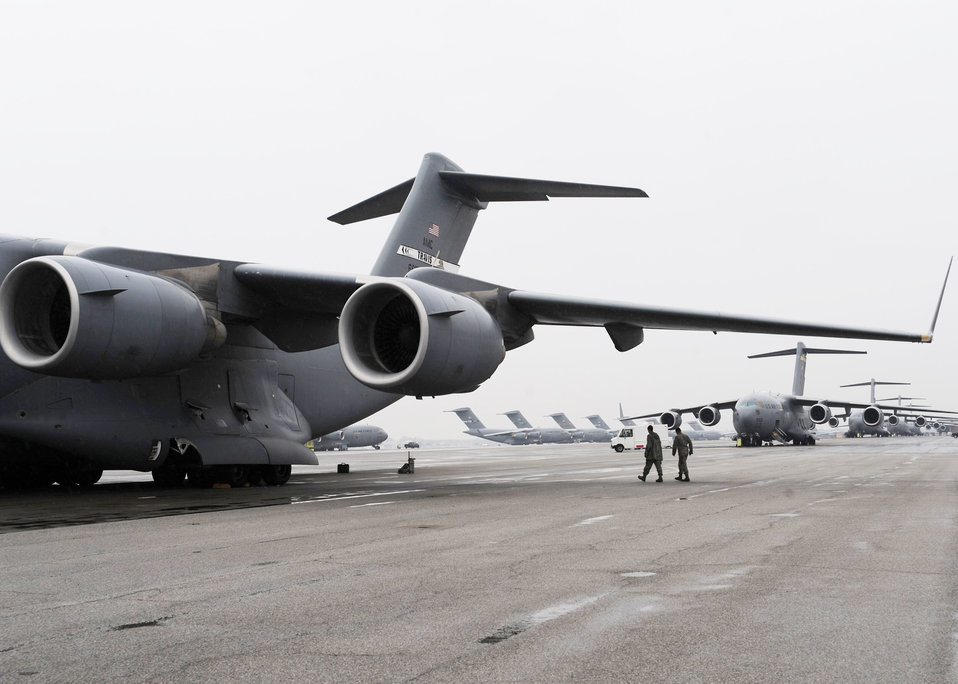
C-17's support Haiti mission

A C-17 Globemaster III from Travis Air Force Base, Calif., sits on the flightline along with planes from several other bases Jan. 21, 2010 at Charleston Air Force Base, S.C. The planes are being used to support the humanitarian relief effort in Haiti.